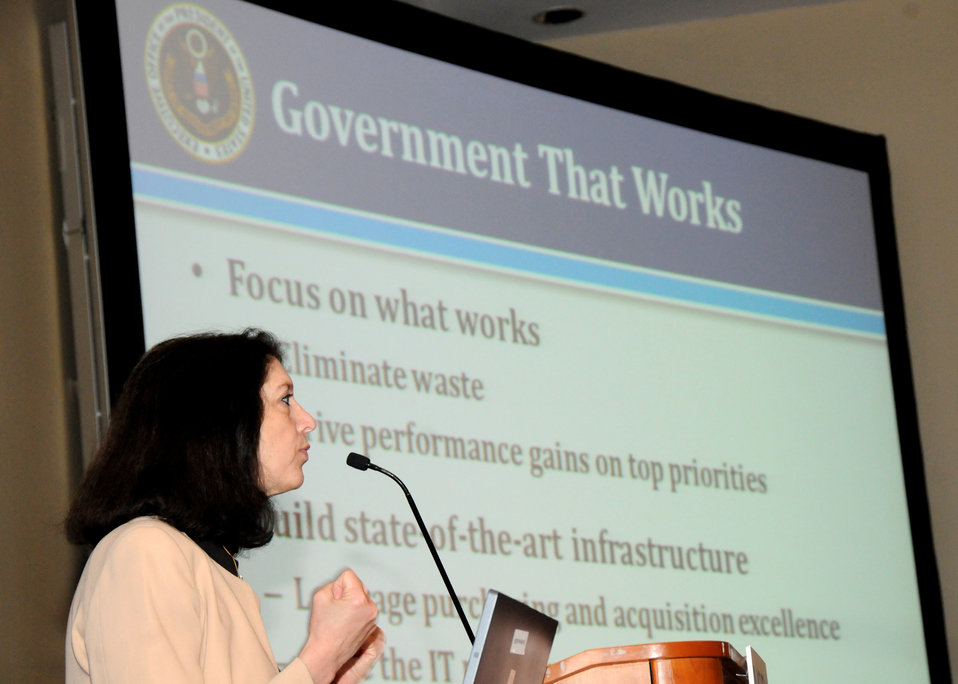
Office of Management and Budget (OMB) Associate Director for Performance and Personnel Shelley Metzenbaum speaks to participants at the Financial Management Training conference held in Washington, D.C., on Thursday, May 27, 2010. Ms. Metzenbaum spoke about the new “Performance Management” system being initiated by the Obama administration. USDA photo 10di1373-13.